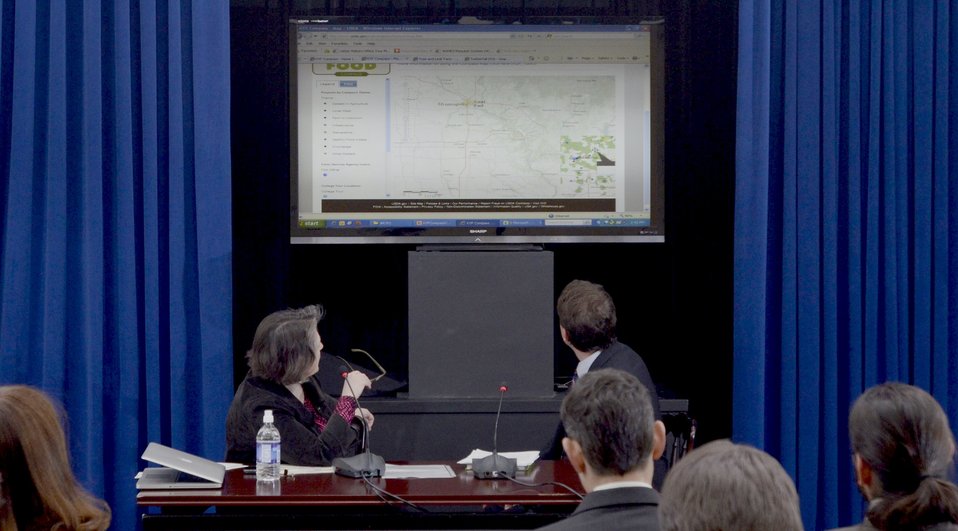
Agriculture Deputy Secretary Kathleen Merrigan and Director, White House Office of Public Engagement Jon Carson, during a Know Your Farmer Compass event that used twitter social media to continue the National Conversation on Local and Regional Food projects and how they offer economic opportunities to local farmers, ranchers and food entrepreneurs. The virtual conversation took place from the White House, in Washington, D.C., on Monday, March 5, 2012.